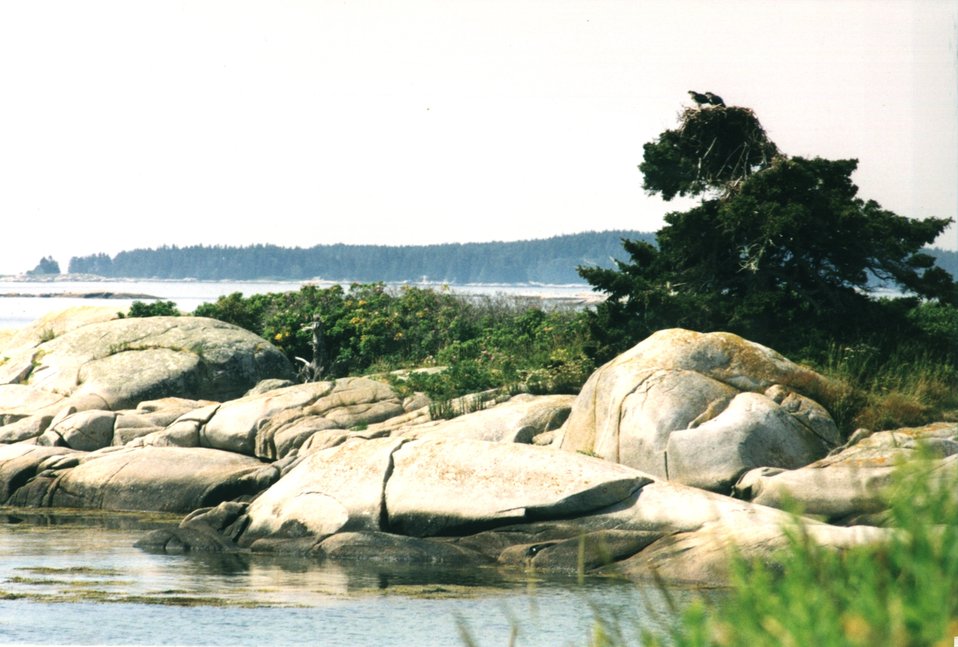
Birch Island glacial sculpted smooth rocky point with ospreys on pitch pine.